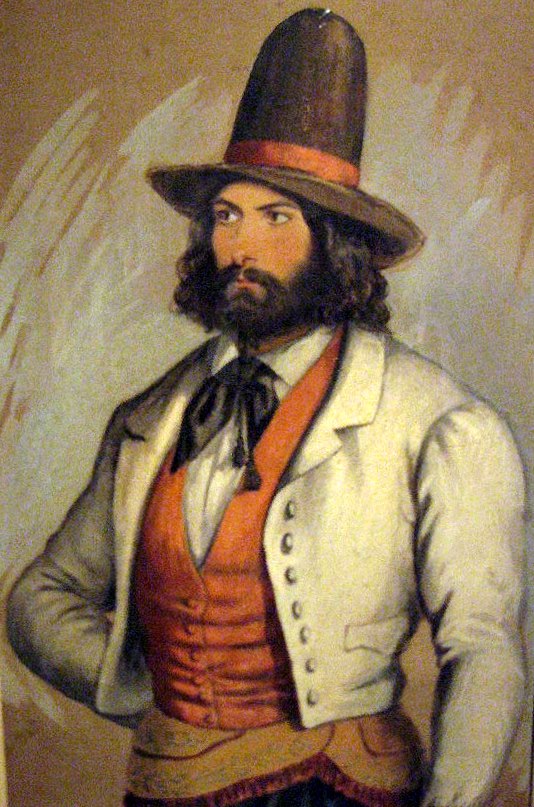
Adolfo d'Hastrel - Estanciero con chaleco federal